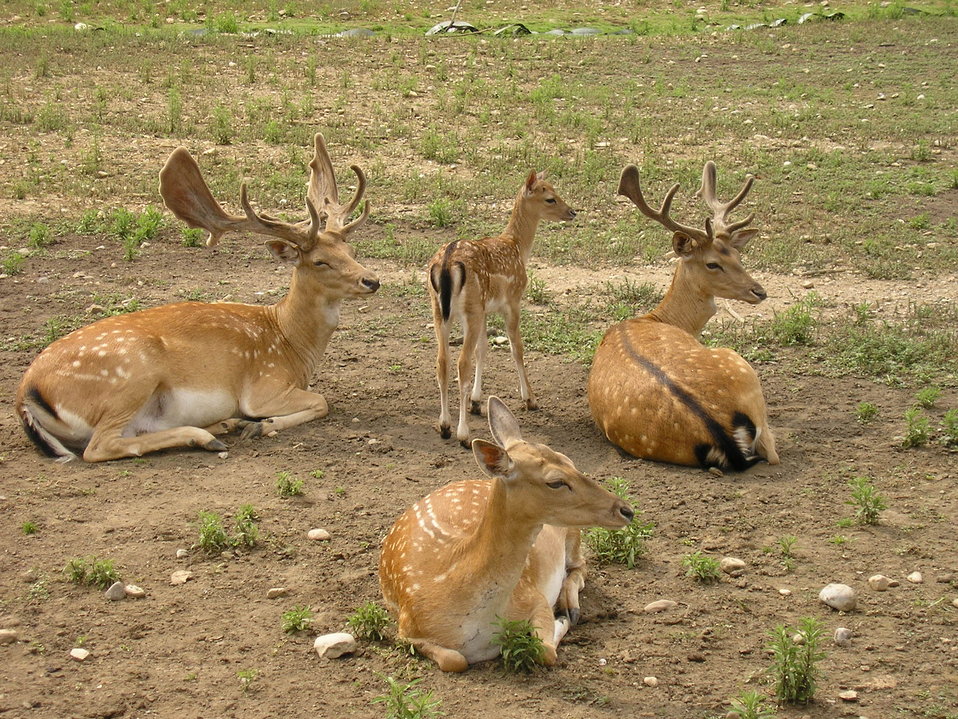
Italiano: Gruppo di daini, it:Parco degli Aironi Cinerini, comune di it:Gerenzano, provincia di it:Varese